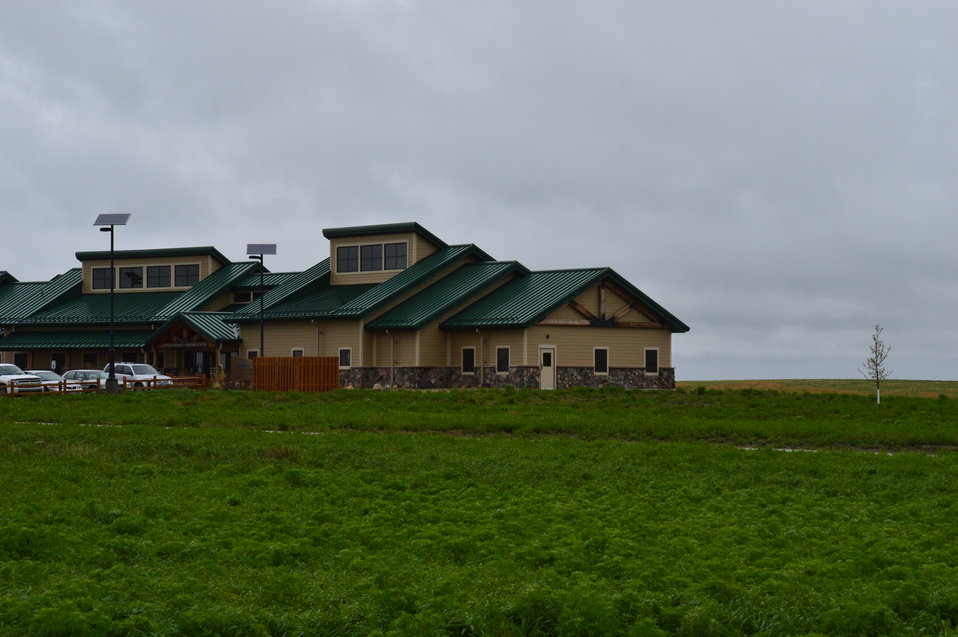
Audubon NWR Visitor Center and offices

Audubon NWR Visitor's Center and office building has an exhibit hall featuring wetlands and grassland habitat, migratory birds, refuge history and more. Also in the building are USFWS offices and a store.